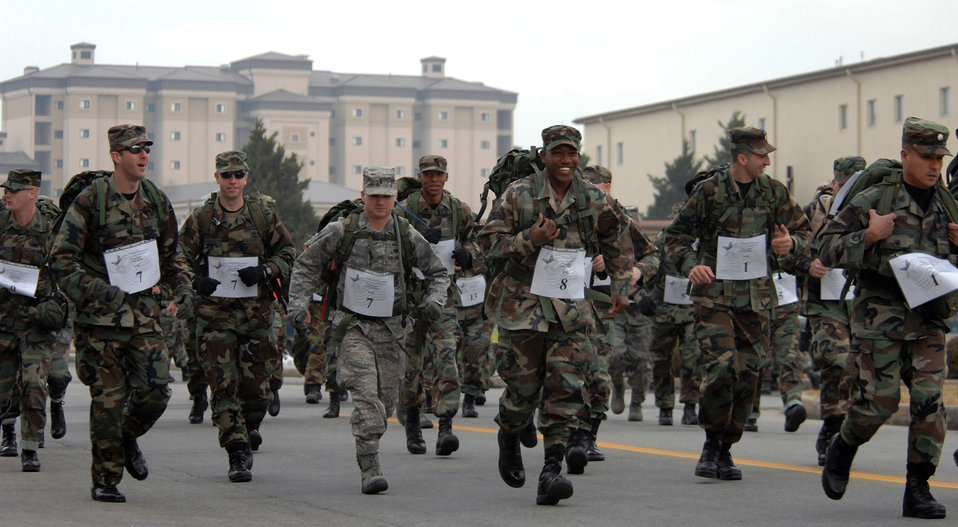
Running a ruck

Teams take off during the Veterans Day Memorial Ruck/Run held Nov 17 at Kunsan Air Base, Republic of Korea. Ten teams, each comprising four members, participated in a 10K march carrying 40-pound ruck sacks followed by a 1.5 mile run. Teams from the Republic of Korea air force joined U.S. teams from Kunsan and Osan air bases for the competition in an effort to build teamwork and camaraderie.